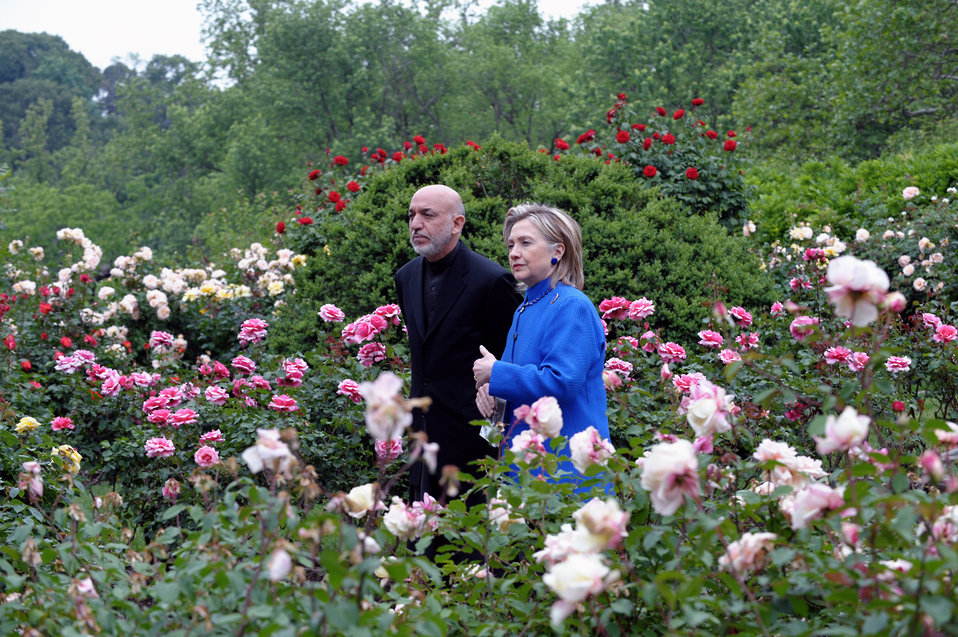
Secretary Clinton and Afghan President Walk in Dumberton Oaks Gardens

U.S. Secretary of State Hillary Rodham Clinton and Afghan President Hamid Karzai hold discussion while walking in the Gardens of Dumbarton Oaks in Georgetown, Washington, DC May 13, 2010.